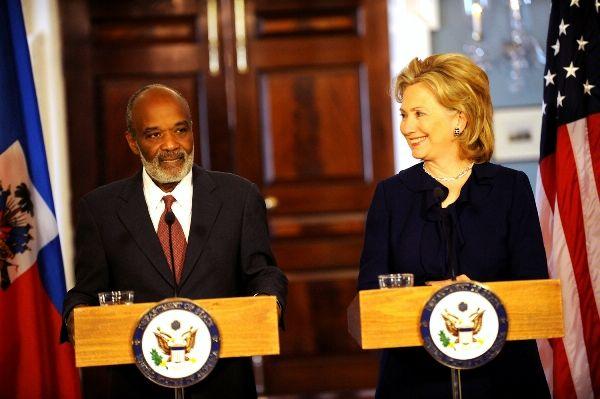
Secretary Clinton With Haitian President Rene Preval

U.S. Secretary of State Hillary Rodham Clinton with Haitian President Rene Preval at the U.S. Department of State in Washington, DC, March 9, 2010.